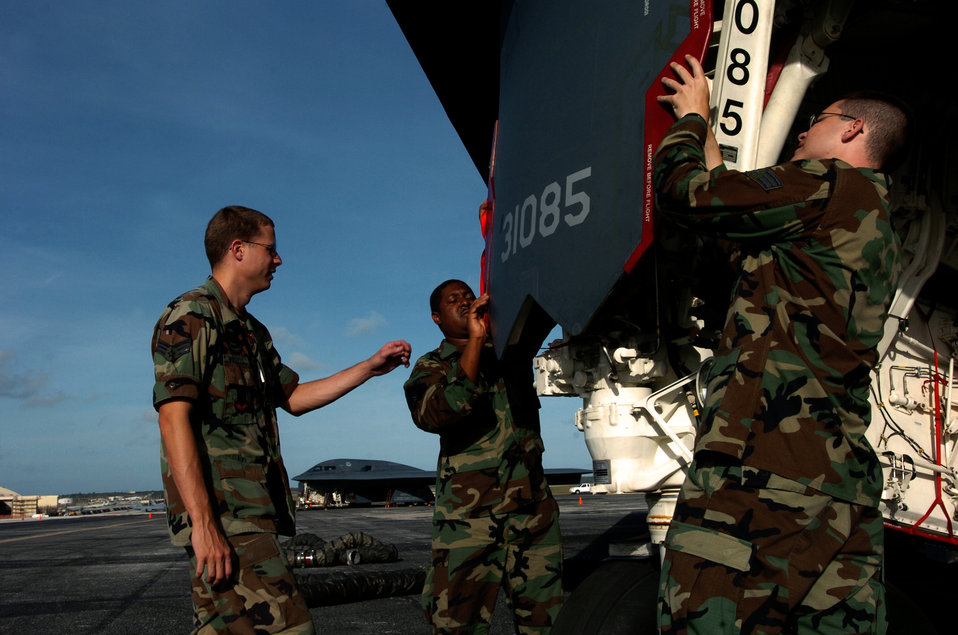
Keeping Spirits high

ANDERSEN AIR FORCE BASE, Guam -- (From left) Senior Airman Randy Willets, Staff Sgt. John Jacobs and Senior Airman James Casselman inspect the landing gear door of a B-2 Spirit bomber before a morning mission here. Bomber aircraft have had an ongoing presence on the island since February 2004. The Airmen are avionics specialists deployed from the 509th Bomb Wing at Whiteman Air Force Base, Mo.